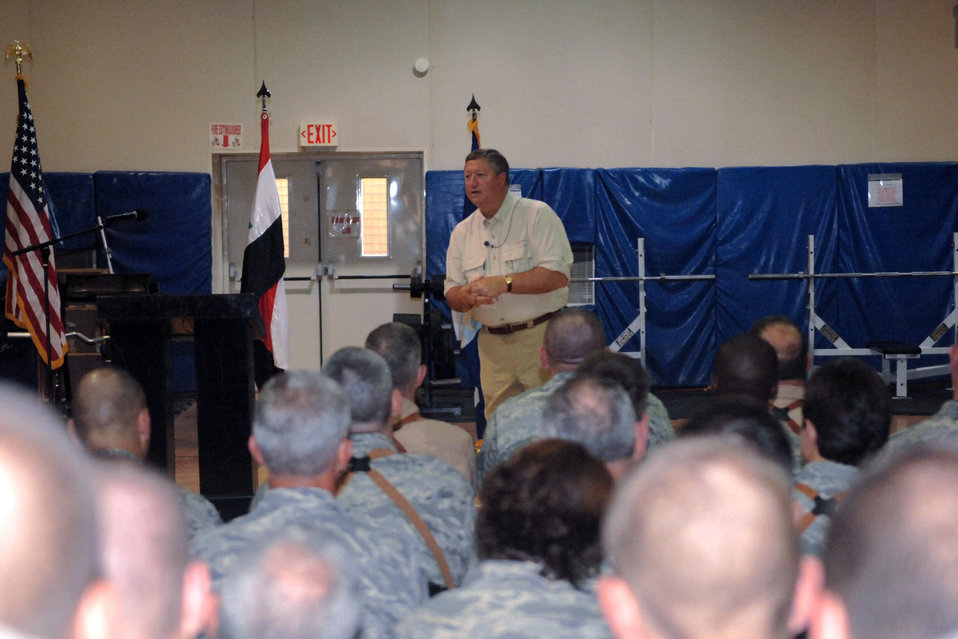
SECAF visits Kirkuk

Secretary of the Air Force Michael Donley addresses more than 400 Airmen during his visit to Kirkuk Regional Air Base Oct. 14. The secretary spoke to Airmen about his vision for the overall mission within the Southwest Asia AOR and the future of the Air Force. Kirkuk was just one of the secretary's stops during his tour around the AOR.